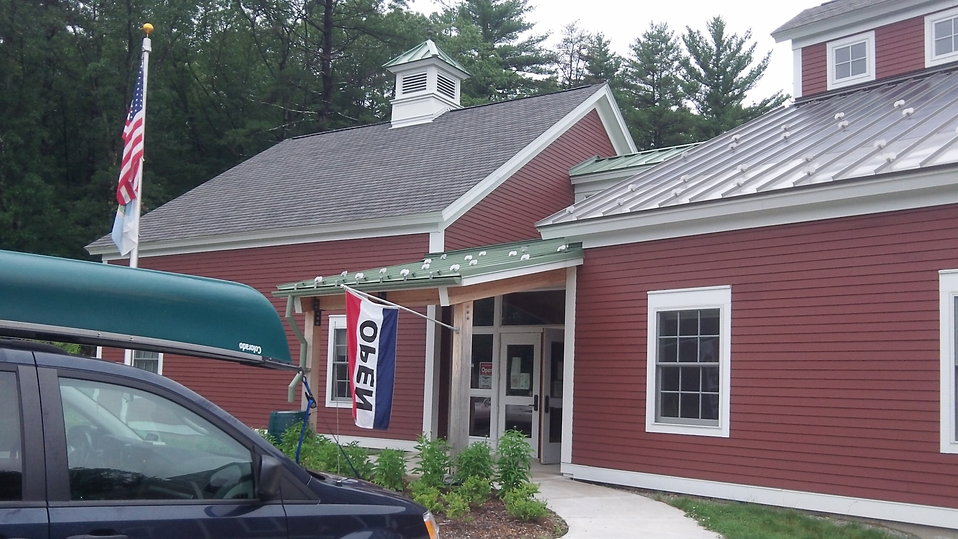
Assabet River National Wildlife Refuge

Visitor's Center at the Assabet River National Wildlife Refuge, Sudbury, MA.